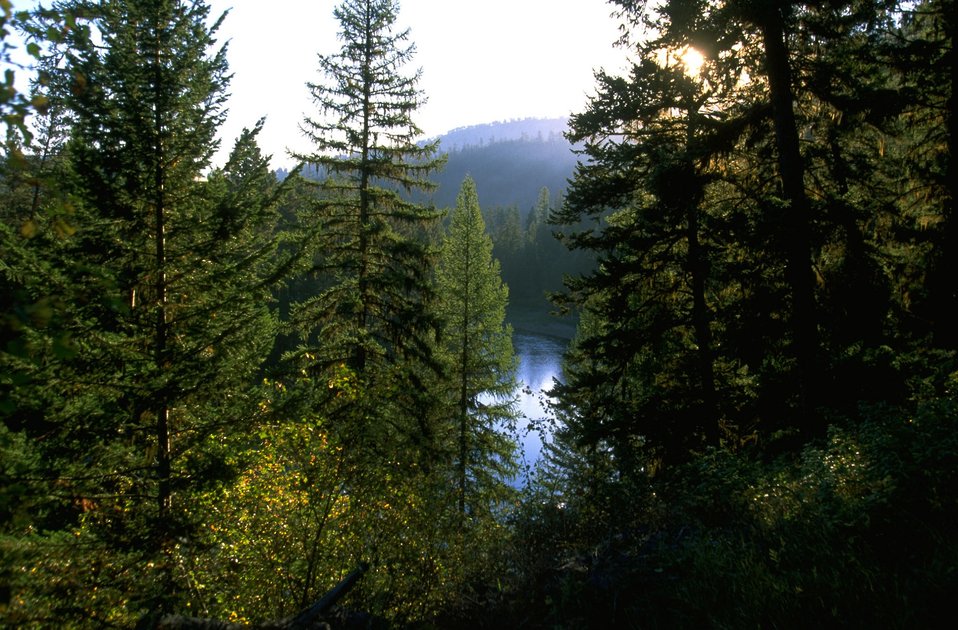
Early monrning on the Blackfoot River